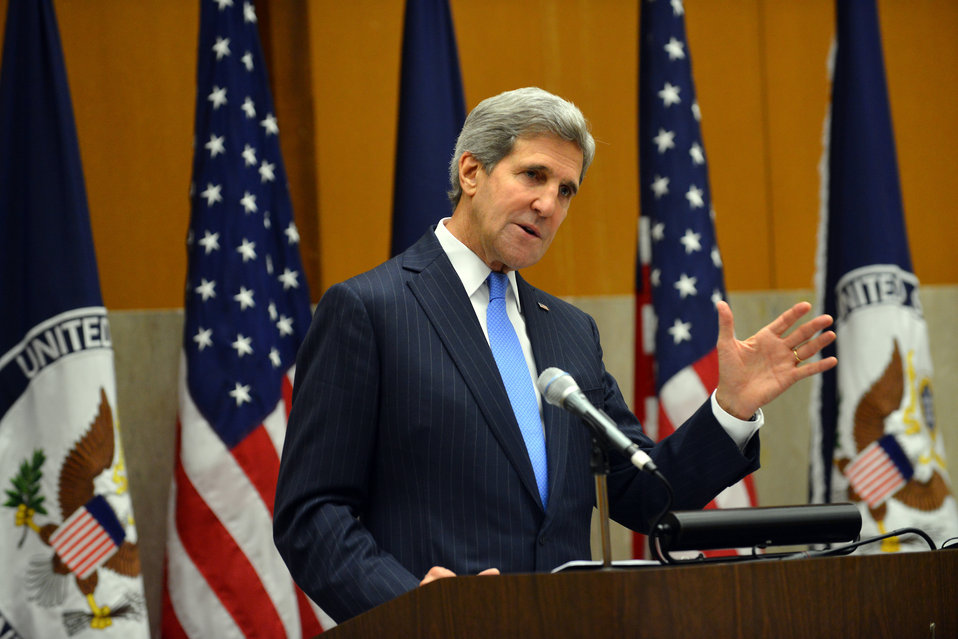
Secretary Kerry Delivers Remarks to the Participants of the Edward R. Murrow Program for Journalists

U.S. Secretary of State John Kerry delivers remarks to participants of the Edward R. Murrow Program for Journalists at the U.S. Department of State in Washington, D.C., on October 30, 2013.